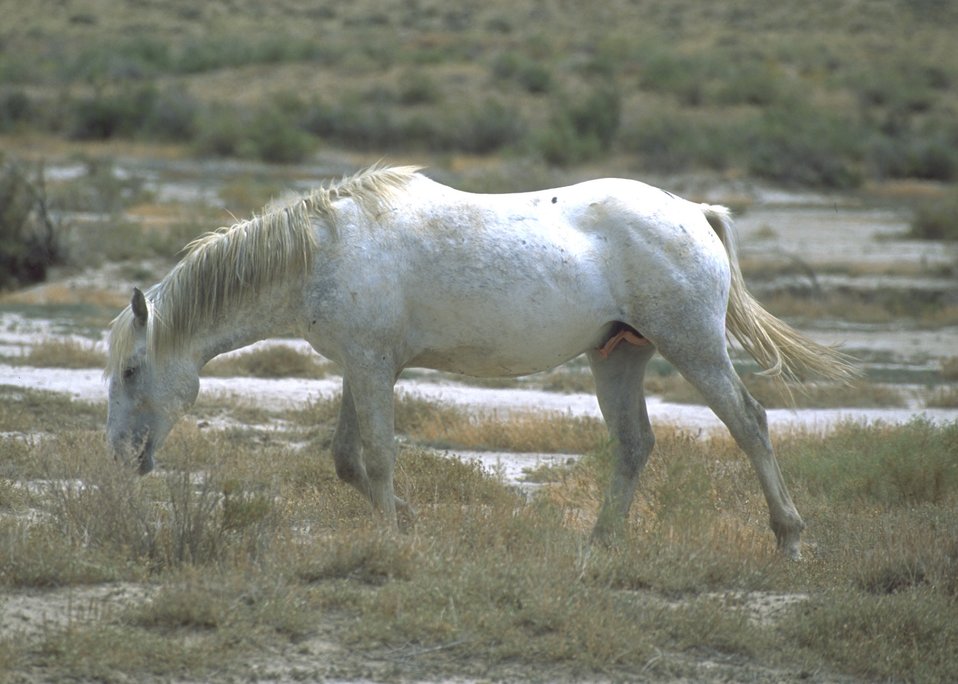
Wild horses, Rock Springs Field Office.